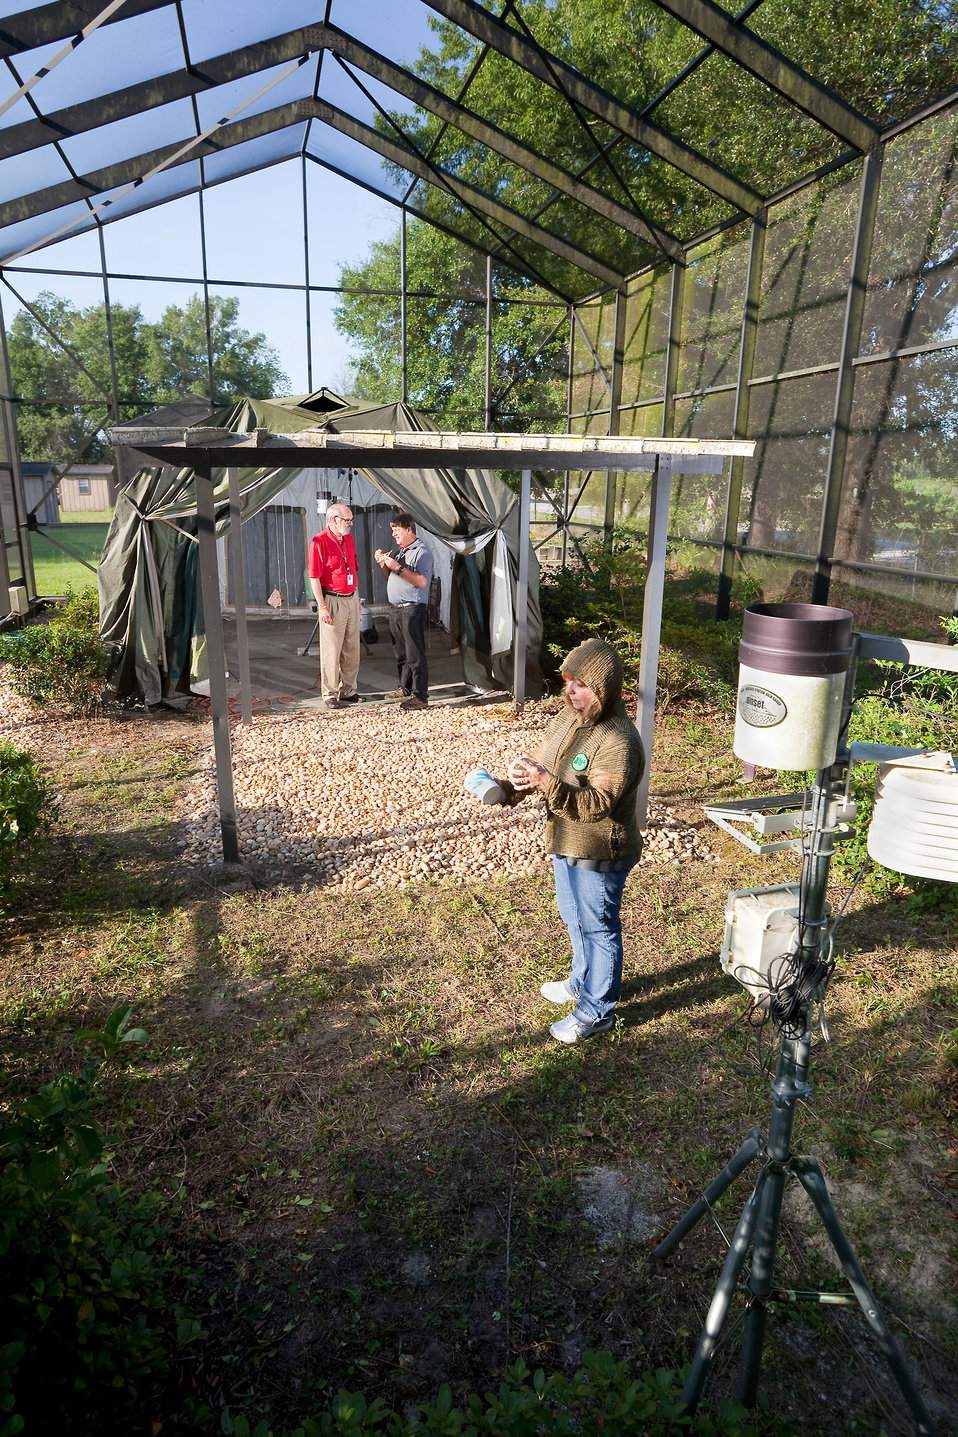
U.S. Department of Agriculture (USDA) Agricultural Research Service (ARS) scientists set up a tent previously used in Iraq to evaluate how effective different compounds are at protecting an occupant from mosquitoes and stable flies at the Center for Medical, Agricultural, and Veterinary Entomology in Gainesville, FL on May 24, 2012. In the foreground, USDA ARS technician Joyce Urban releases mosquitoes as entomologists Gary Clark and Dan Kline place spatial repellent delivery devices for testing.